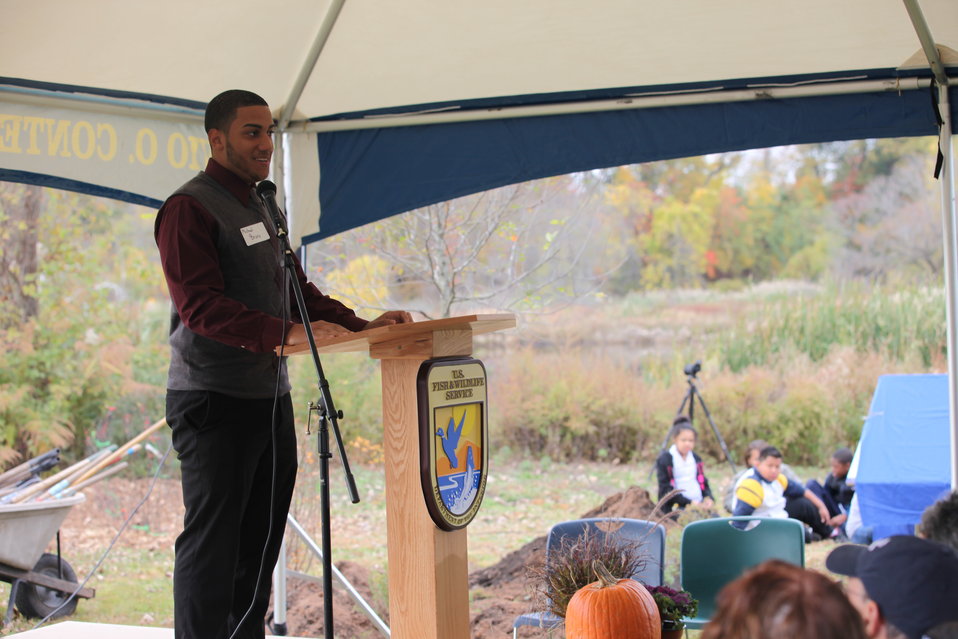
Michael Bruno, a graduate of Common Ground High School speaks about the influence the partnerships in New Haven have had on him.